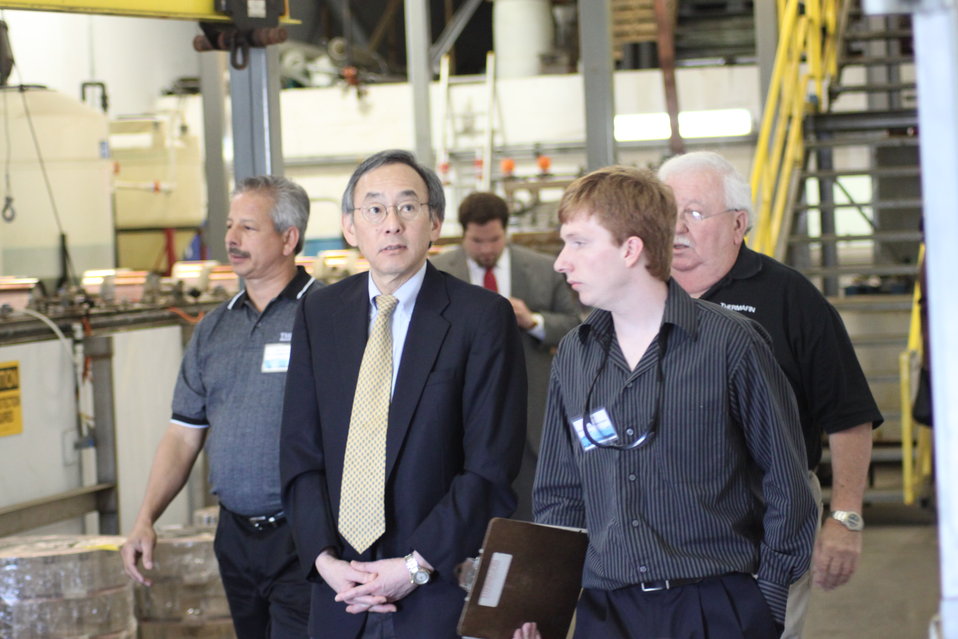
Norm 018